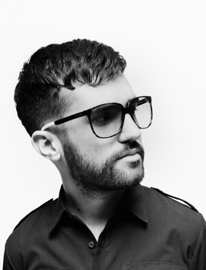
A-Trak (born Alain Macklovitch on March 30, 1982) is a Montreal-born DJ and turntablist.